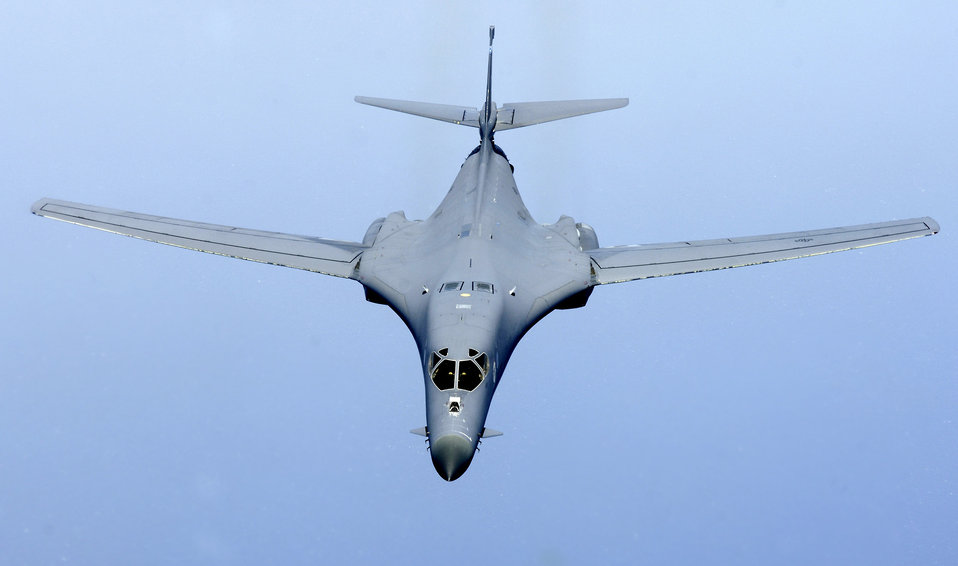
Aug. 1 airpower summary: B-1Bs conduct precision strikes

An Air Force B-1B Lancer flies over Iraq. The B-1B can rapidly deliver massive quantities of precision weapons against any adversary, anywhere in the world, at any time.